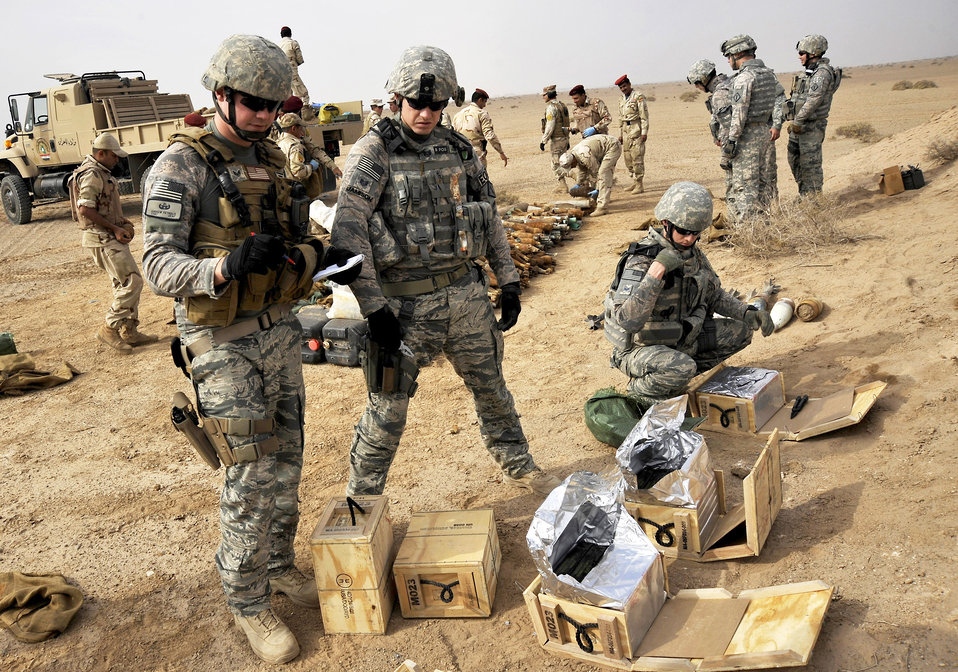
Air Force explosive ordnance disposal technicians prepare for a controlled detonation by taking inventory of the number of boxes of C-4 they have available, Nov. 23, 2009, at Mahmudiyah, Iraq. The purpose of the control detonation is to mitigate explosives hazards and limit the enemy's warfighting capabilities in Iraq. The EOD Airmen are from the 447th Expeditionary Civil Engineer Squadron, deployed to Mahmudiyah, Iraq.